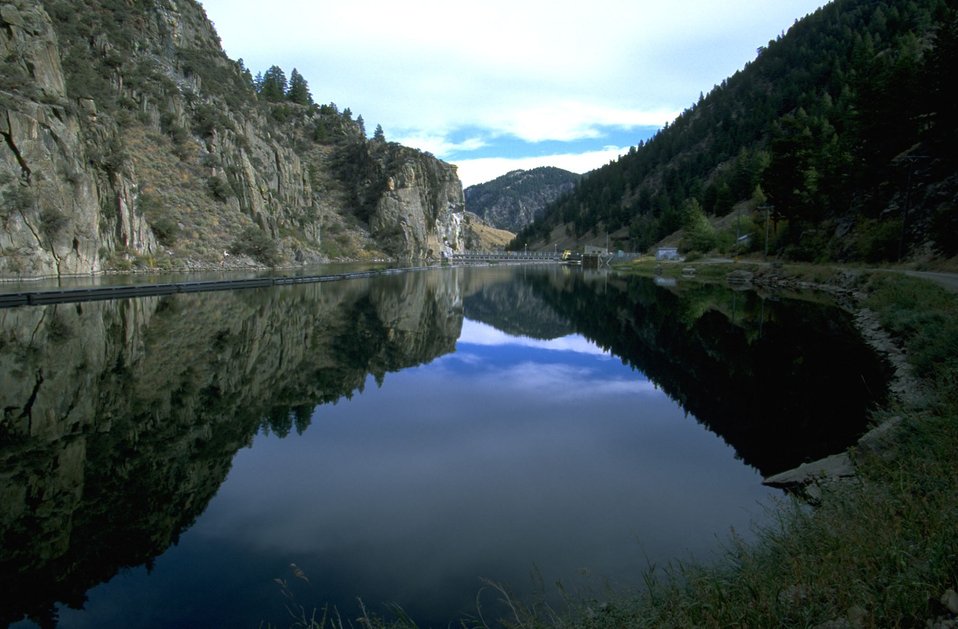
Upper view of Dam